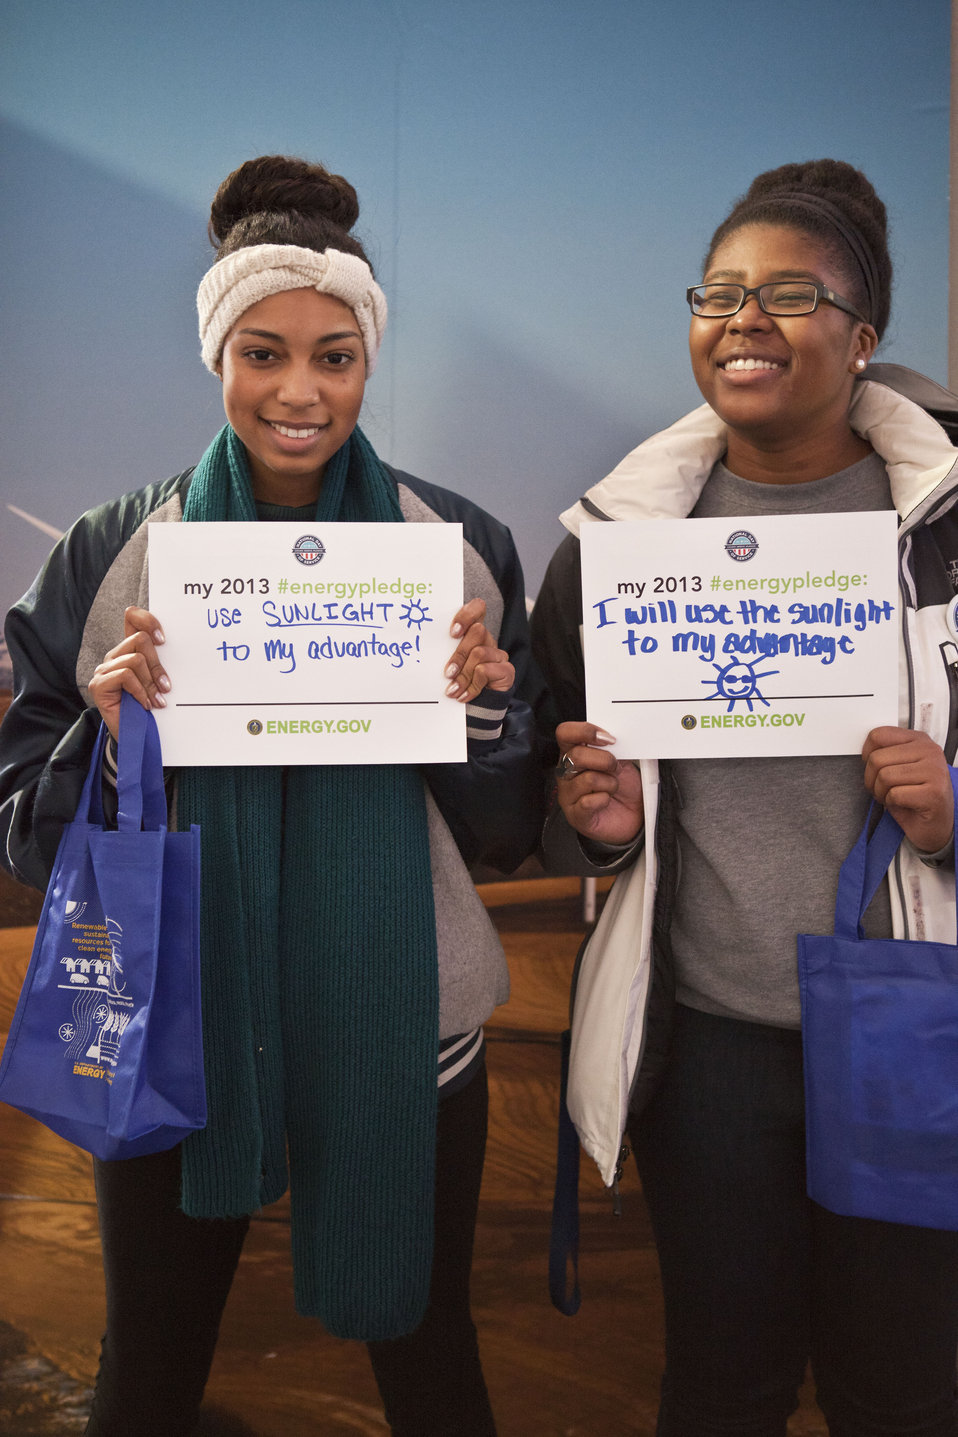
What's your #energypledge?